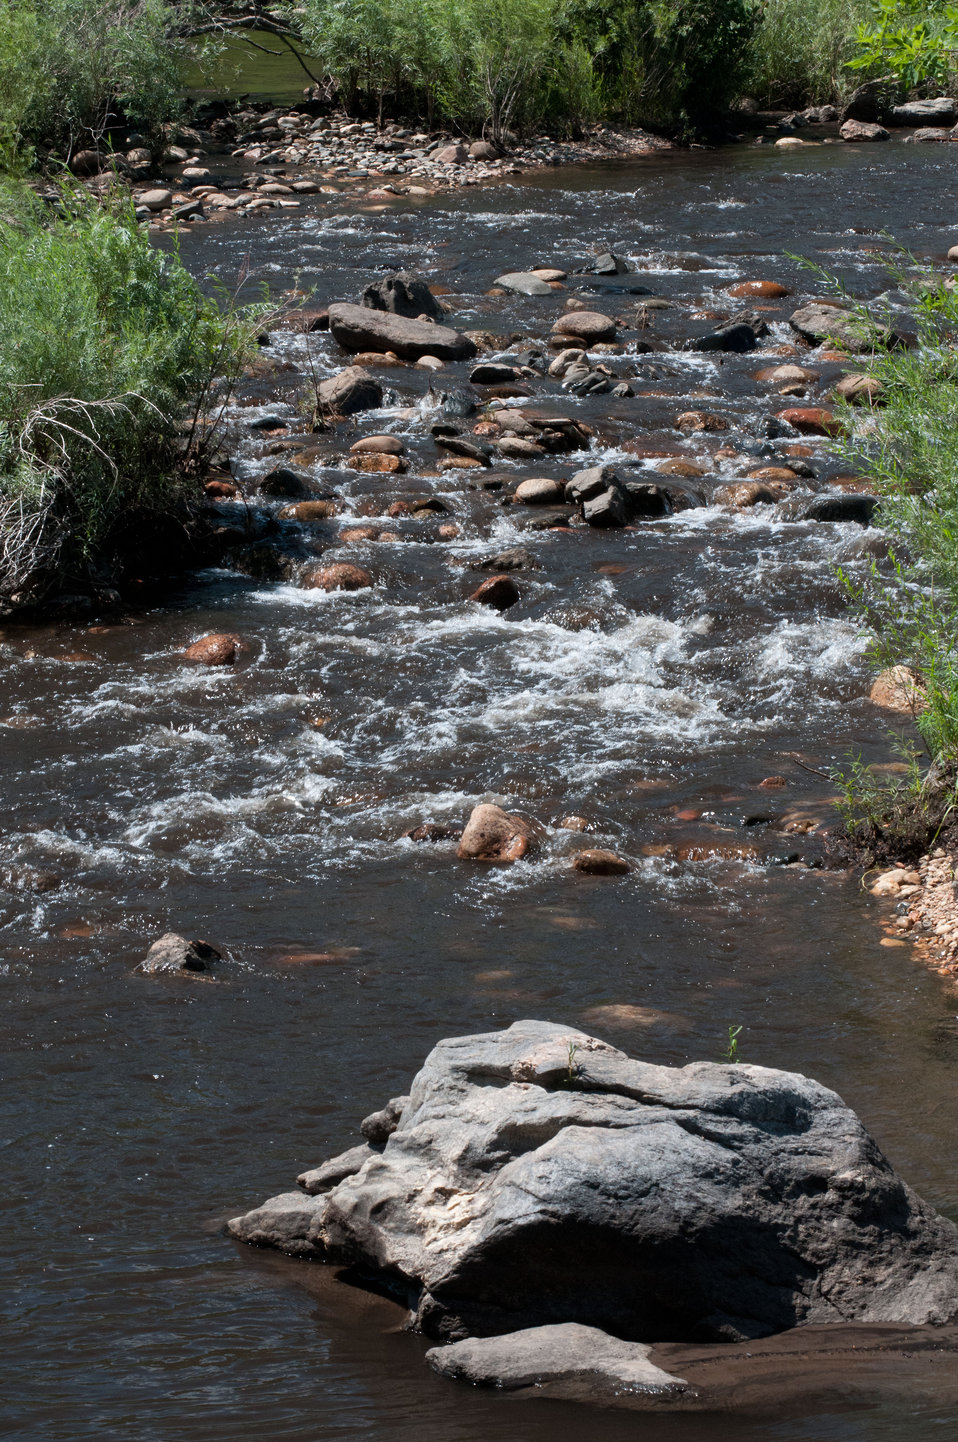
A confluence of two downstream tributaries, the Cache la Poudre and the North Fork of the Cache la Poudre, near Seaman Reservoir, 60 miles north of Denver, on Friday, July 20, 2012, near Fort Collins, Colorado, have been transformed from famously clear mountain waters to a nearly black flows of water, heavily laden with ash, silt, and burnt debris that was recently washed down mountainsides by thunderstorms. The mountainsides were burned by the Hewlett Gulch Fire (May 14), in the Poudre Canyon area. At its peak more than 400 firefighters were battling fires pushed by 50 mph winds. When the last embers were cooled, more than 12-square miles lay blacked at a cost of approximately 3.2 million dollars to fight. The aerial distribution of straw has successfully kept nearby Seaman Reservoir clean for the drinking water of the City of Greeley. Forest Service lands receive straw, while private and other lands receive a seed mix and straw to promote ground cover plant growth on ash-covered lands. In total, 1,800 tons of straw will be applied during the 14-day operation. One quarter of the cost was paid by the City of Greeley and the U.S. Department of Agriculture funded the remainder.